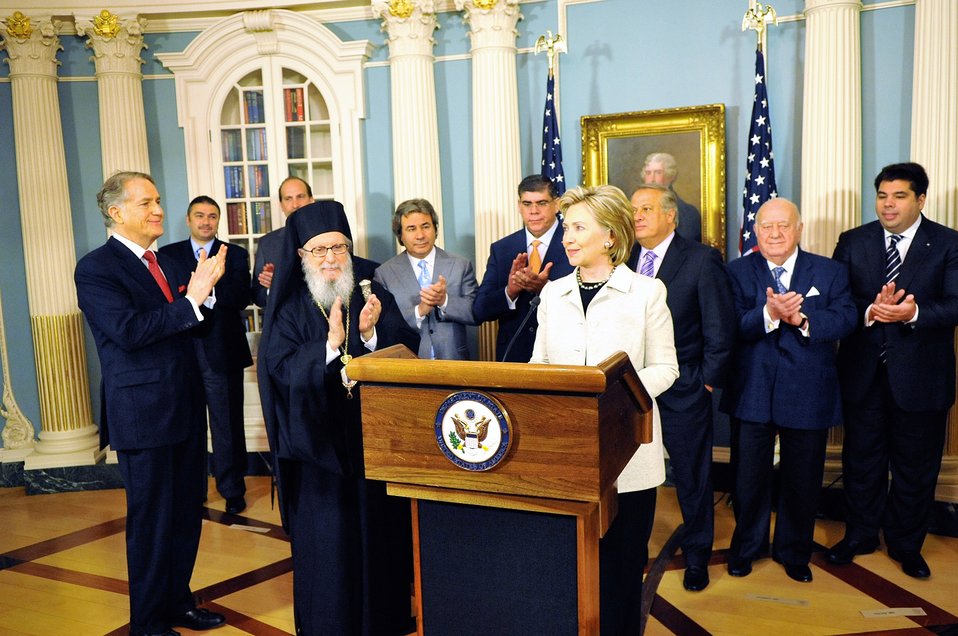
Secretary Clinton Receives National Coordinated Effort of Hellenes Award

U.S. Secretary of State Hillary Rodham Clinton provides remarks during an awards ceremony with the National Coordinated Effort of Hellenes in the Treaty Room of the U.S. Department of State in Washington, DC May 22, 2009.